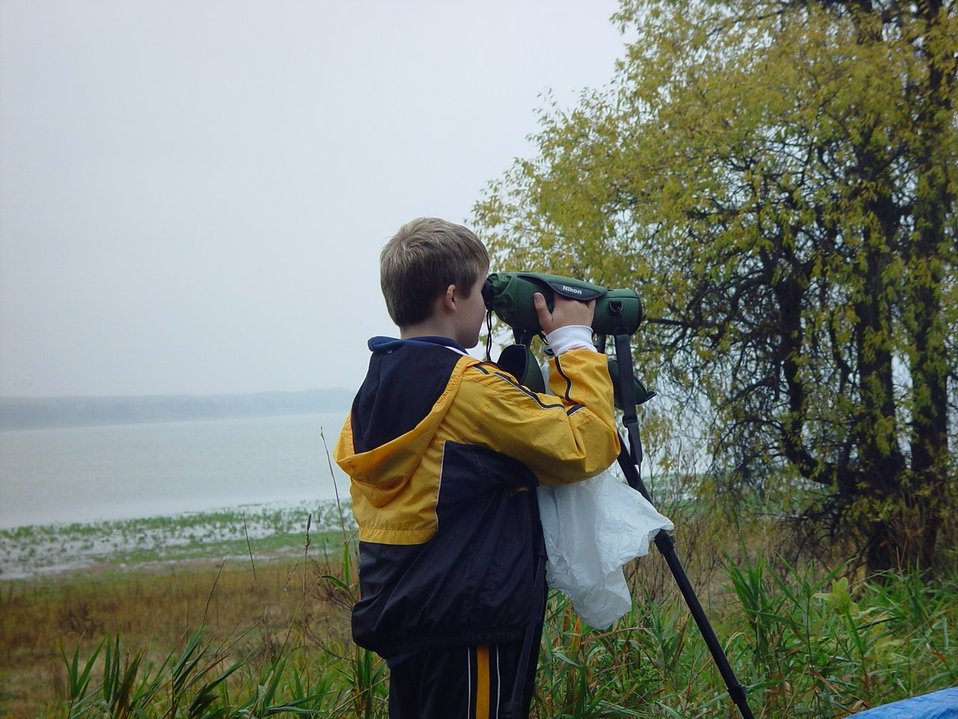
Young Bird Watcher

In celebration of National Wildlife Refuge Week, Arrowwood National Wildlife Refuge hosted the 'Big Sit'-- a 24-hour bird watching event. The young birder pictured above is taking part in the activities.